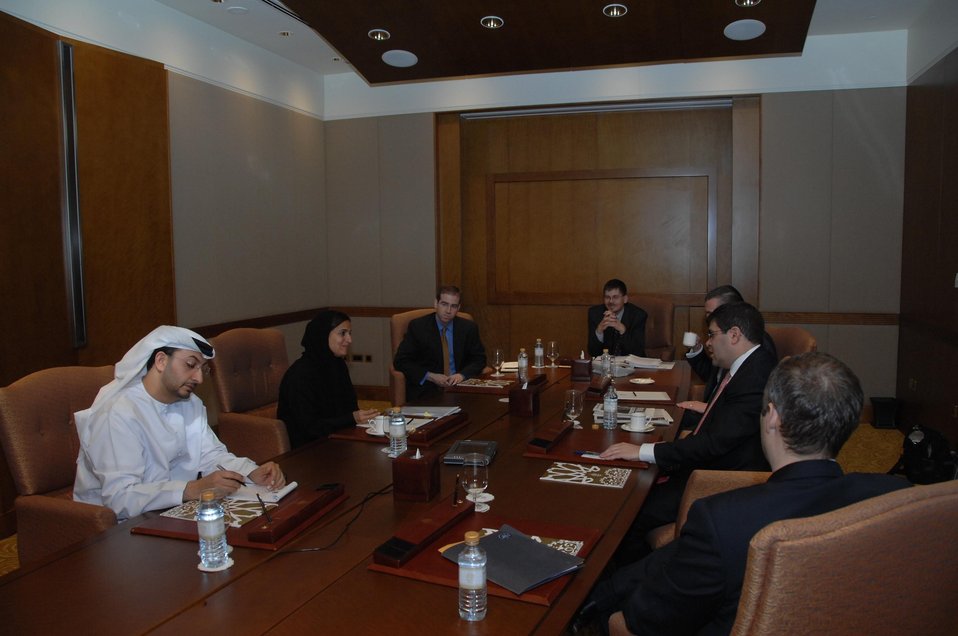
Meeting with UAE Minister of Foreign Trade Sheikha Lubna al Qasimi

On Monday, February 15, Deputy Secretary Wolin met in Abu Dhabi, UAE with Minister of Foreign Trade Sheikha Lubna al Qasimi.